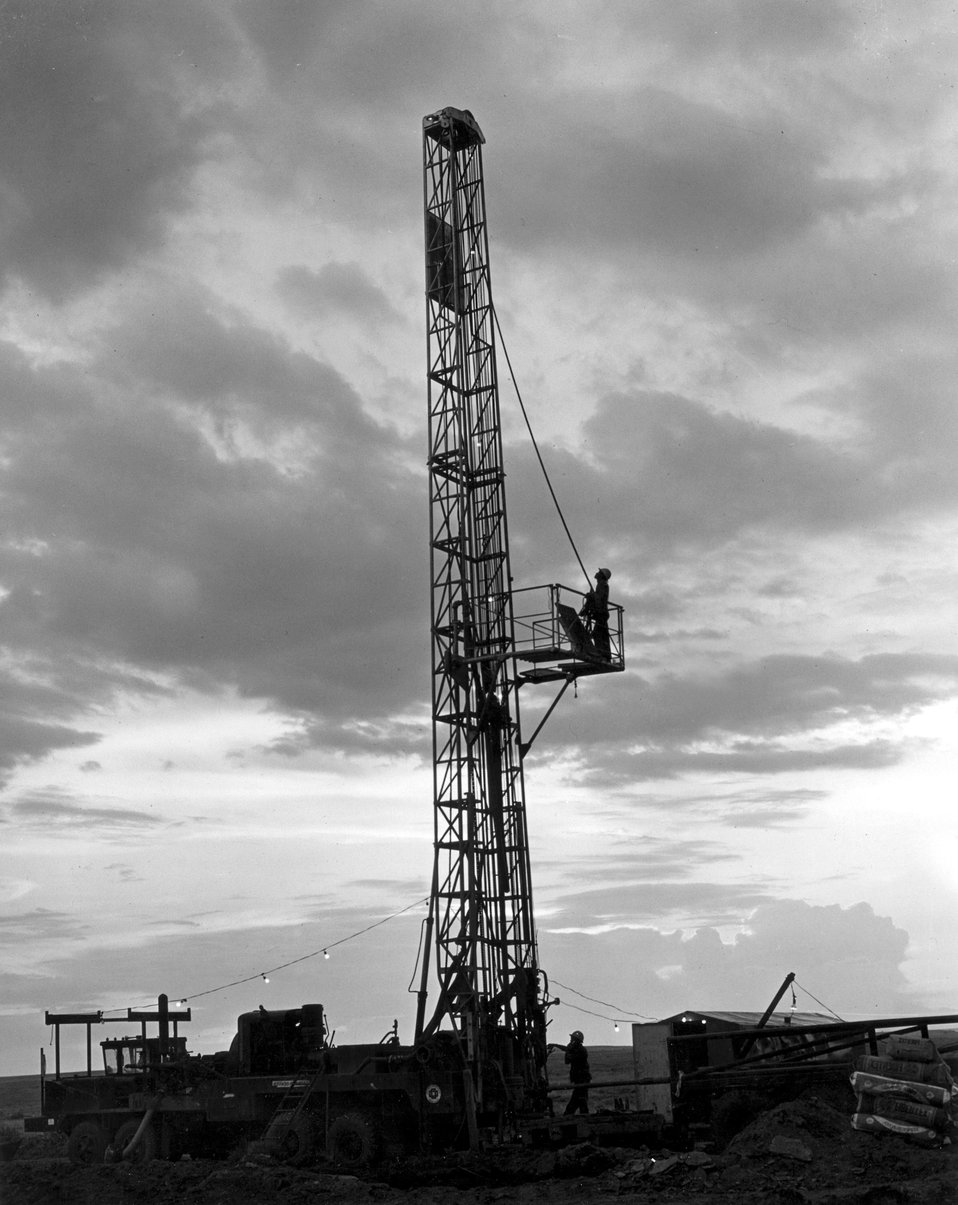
Night view of core drilling for uranium at Ambrosia Lake, New Mexico, not far from Grants and the Continental Divide. c. undated